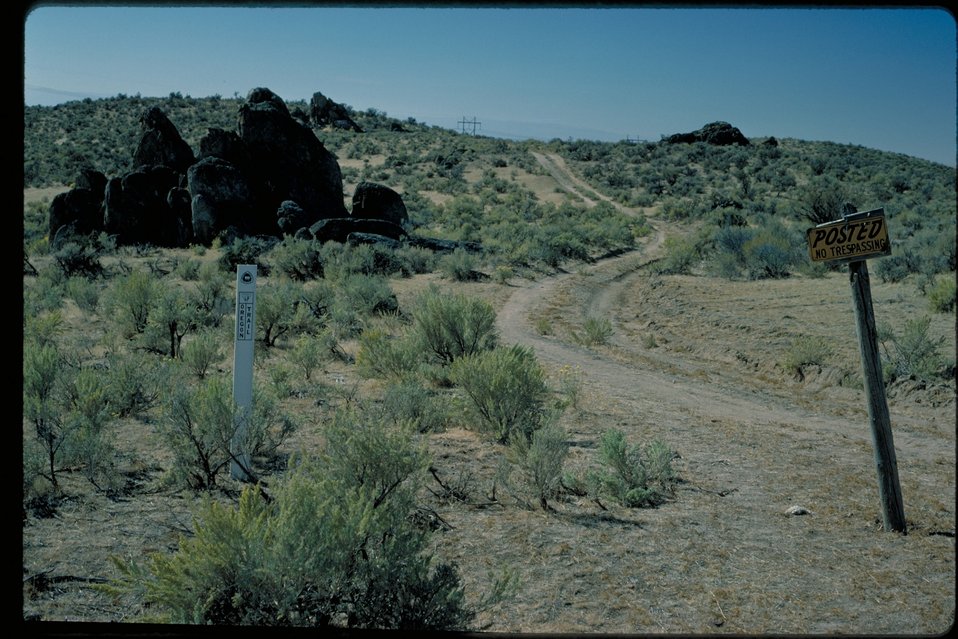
Oregon Trail South East of Bowns Creek Lower Snake River District